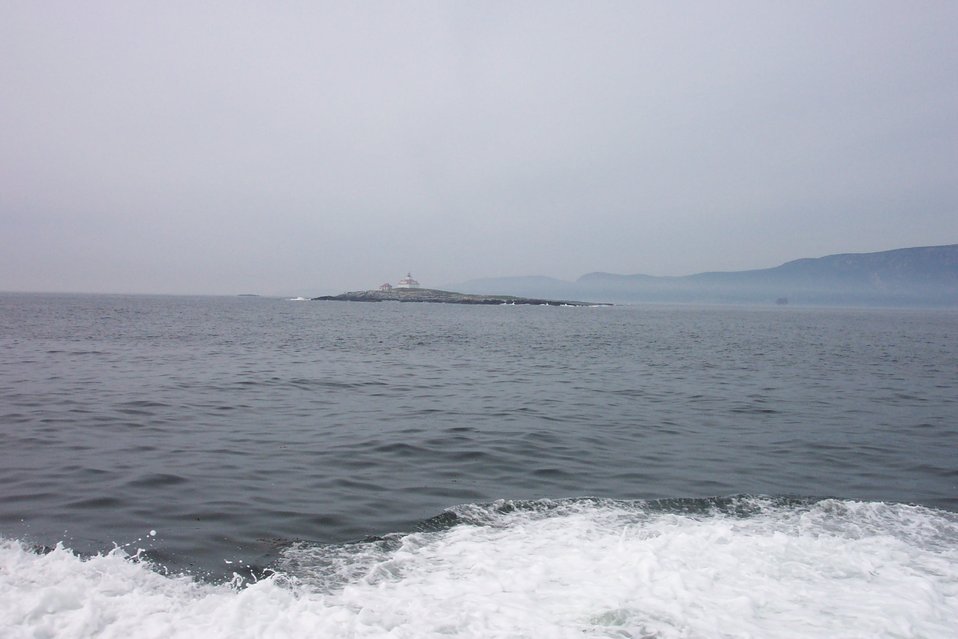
Egg Rock Island Lighthouse as seen leaving Bar Harbor on whale-watching cruise.